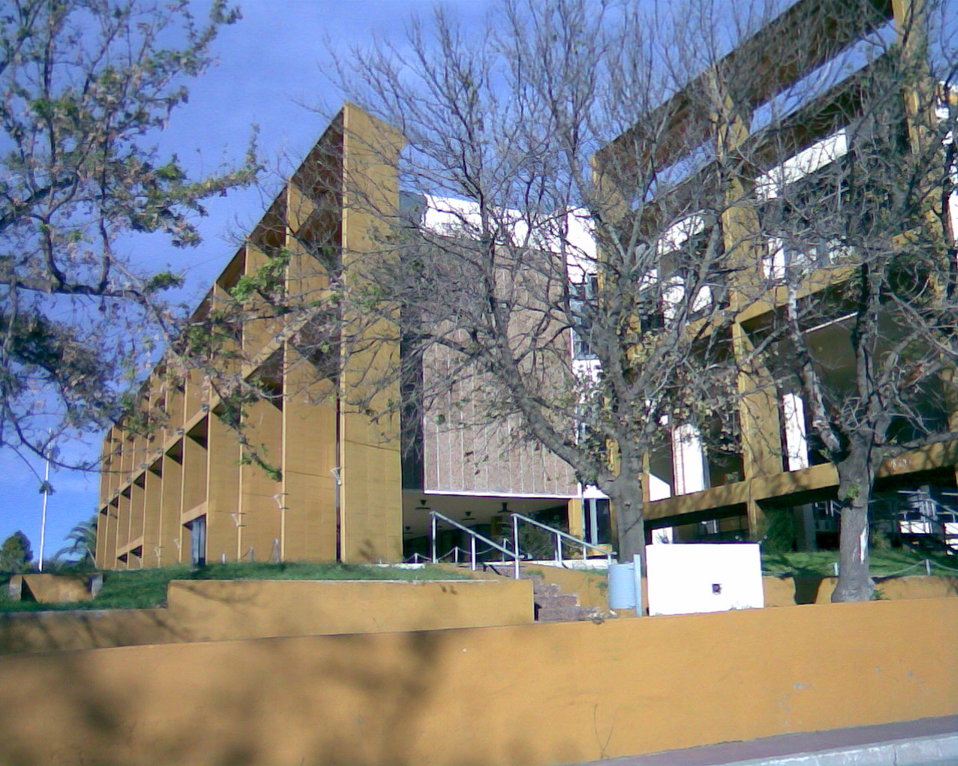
Edificio de la Cámara de diputados de La Pampa, plaza.